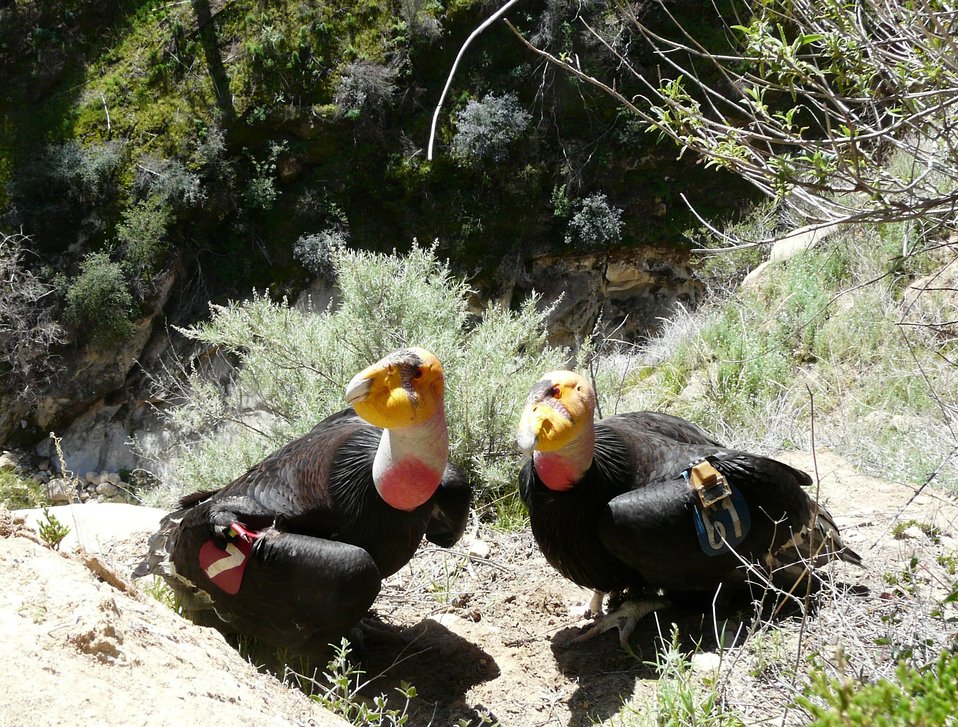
California condor pair

A pair of California condors perch outside of their nest cave on the side of a cliff near Hopper Mountain National Wildlife Refuge in California.